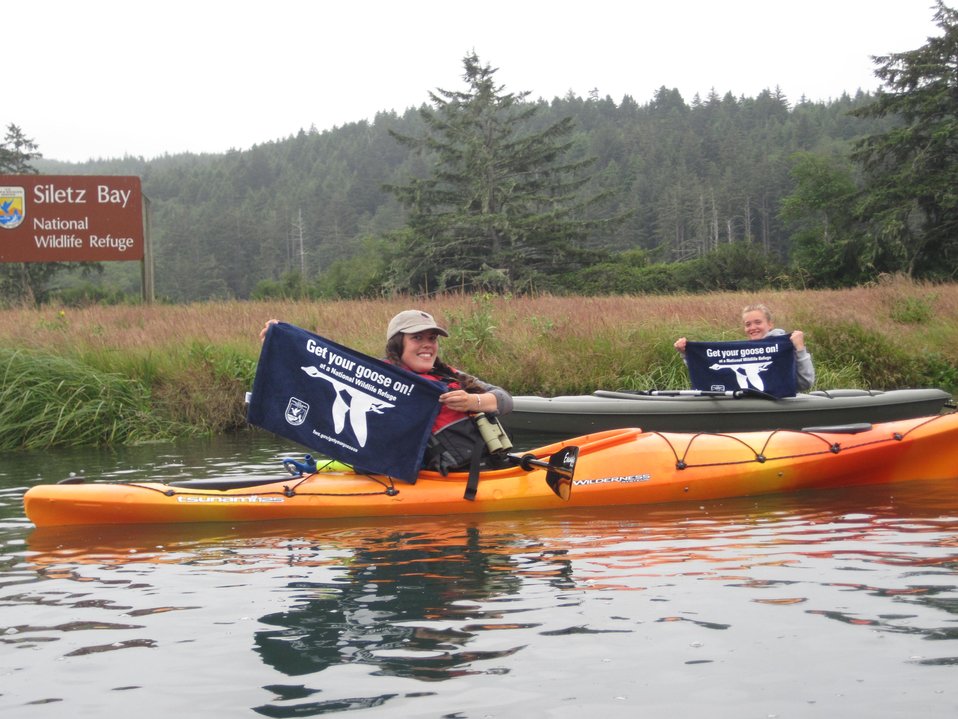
Get Your Goose On!

USFWS Wildlife Education Intern Octavia Sola' and Oregon Coast native Linnea Zeller Get Their Goose On at Siletz Bay National Wildlife Refuge during a summer paddle trip!